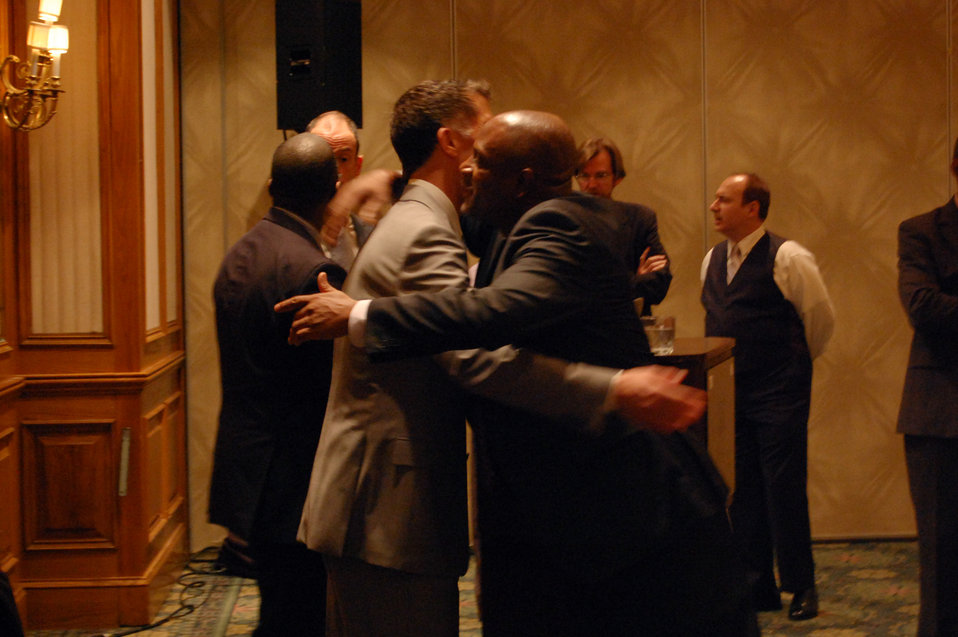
PACHA conf022